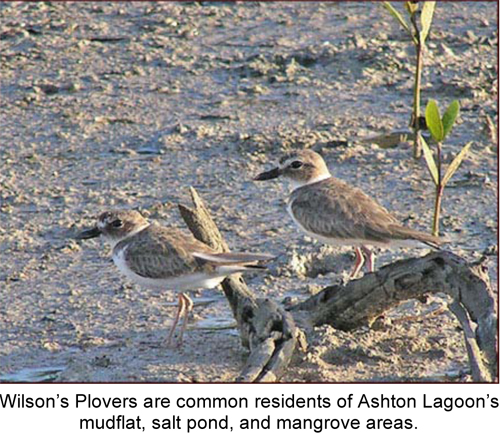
Workshop-Report-Ashton-Lagoon-Final